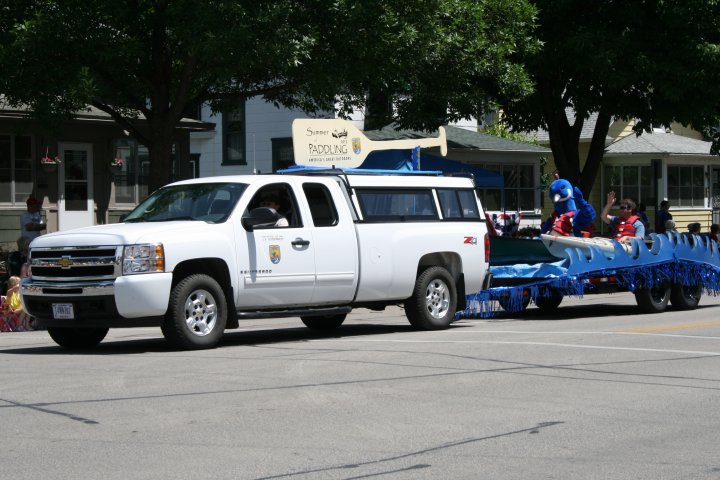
Stemper pulling float

Wildlife Biologist Brian Stemper waves to the crowd while pulling the Summer of Paddling float in the Steamboat Days Parade held in Winona, MN.